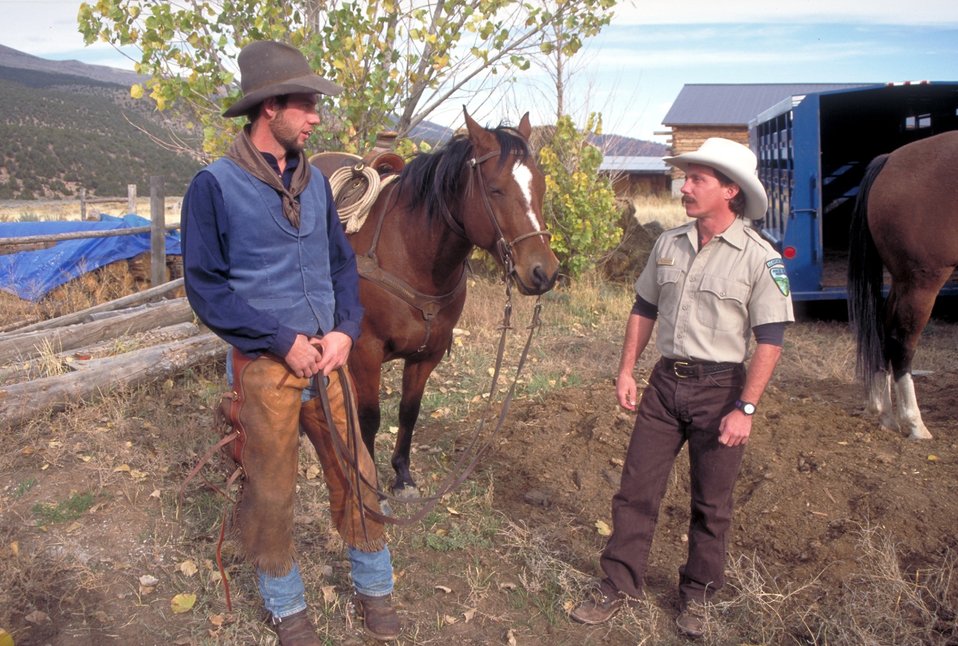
Working cowboys living near Vernal, Utah.